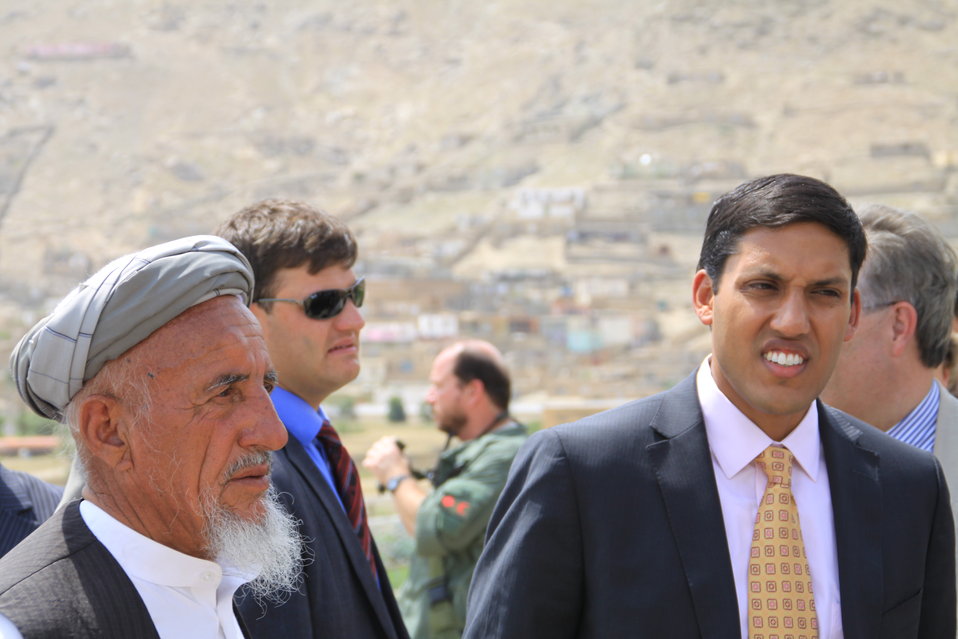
Badam Bagh Farm